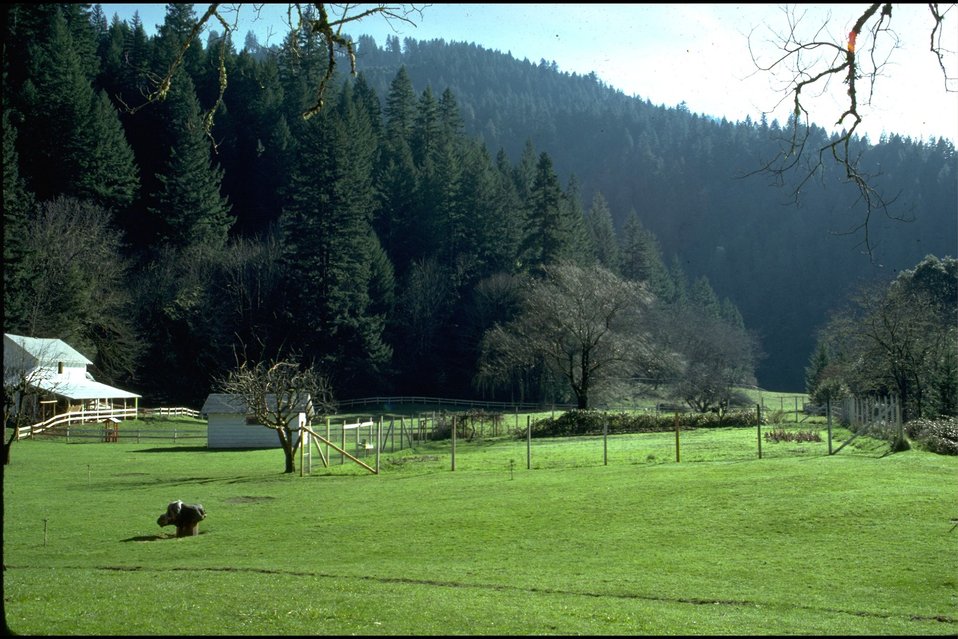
Rogue River Ranch - View of field with barn and back of Tack House.